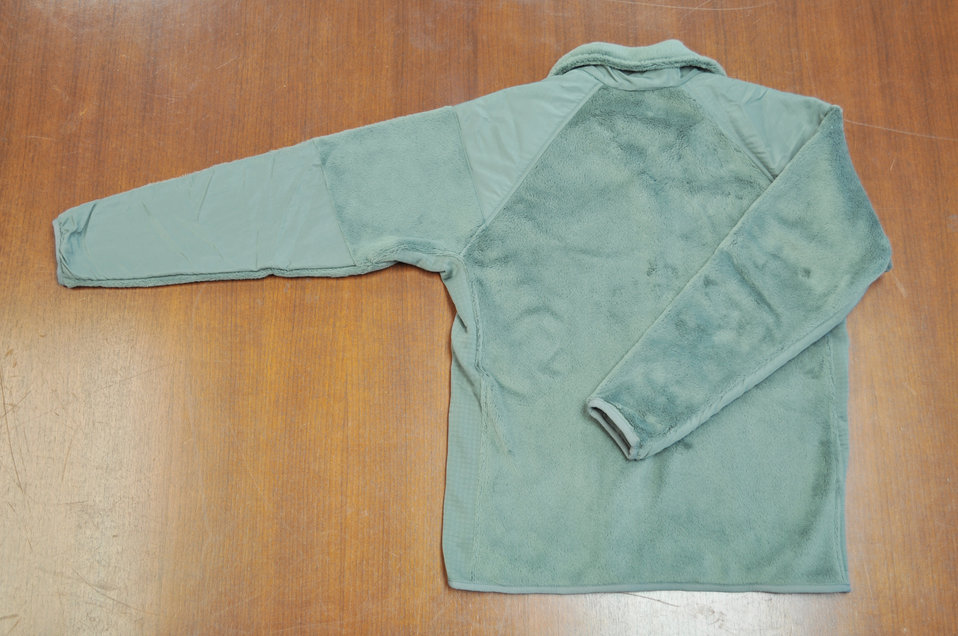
Air Force officials release fleece wear policy

Pictured is the back of the sage green fleece outer garments. Members of the 98th Air Force Virtual Uniform Board released a policy message for wearing the new Air Force sage green fleece as an outer garment for the airman battle uniform.